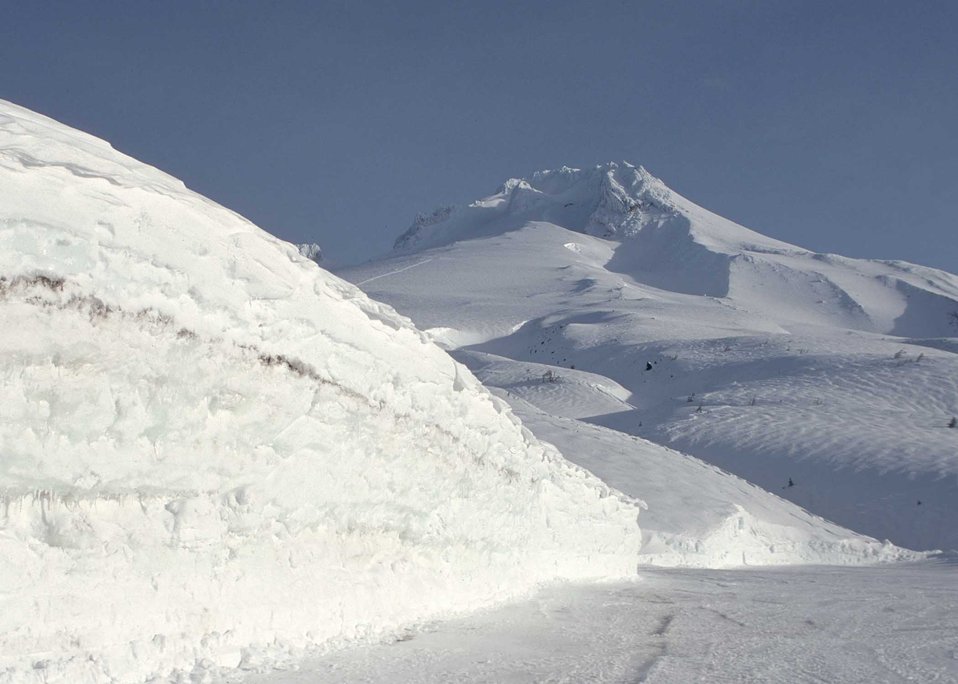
Snow cleared from roadway, on mountains; Sierra Nevada Mountain Range, Washoe County, NV.